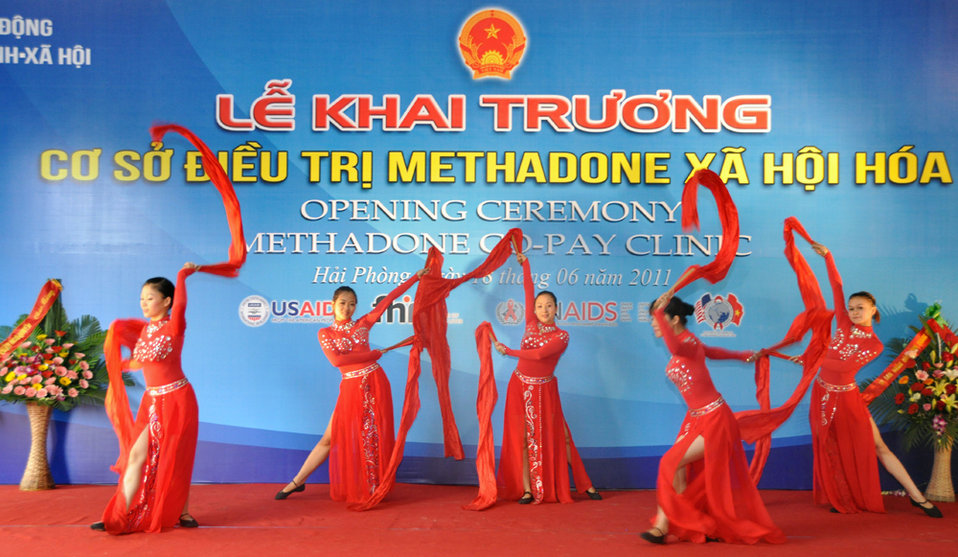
Co-pay Methadone Treatment Center Opens in Hai Phong on June 18, 2011